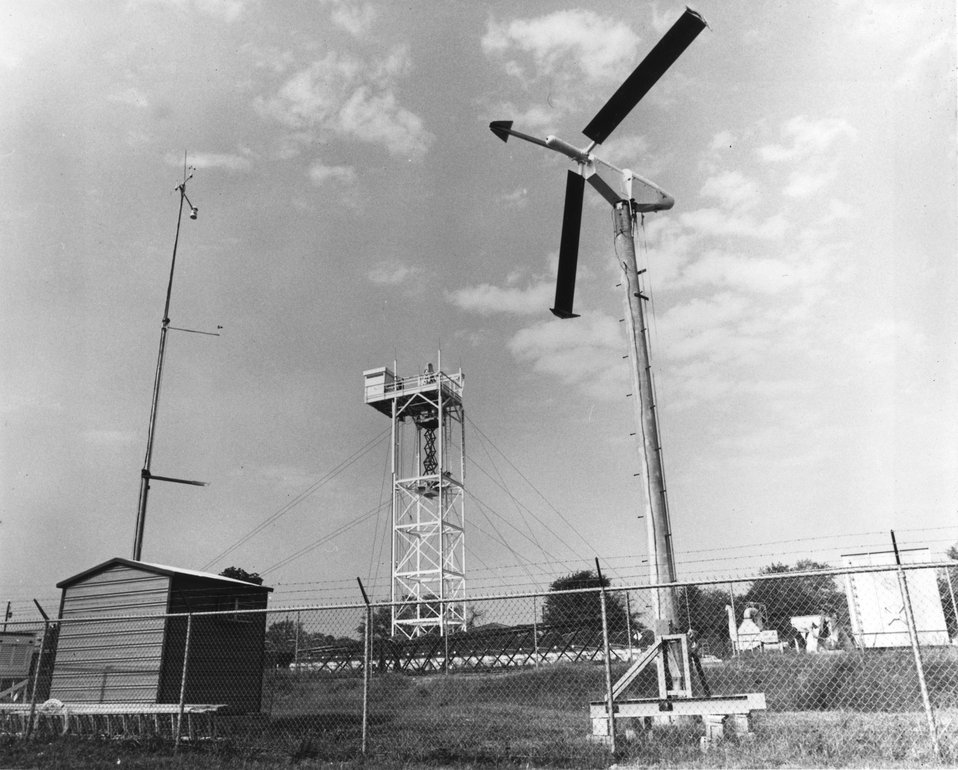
A 15 KW Gruman wind stream electric generator has been installed on the Tech campus for purpose of obtaining wind data statistics, developing assessment methodology and investigating a variety of problems oriented to the eventual practical implementation of a WECS. c. 1979